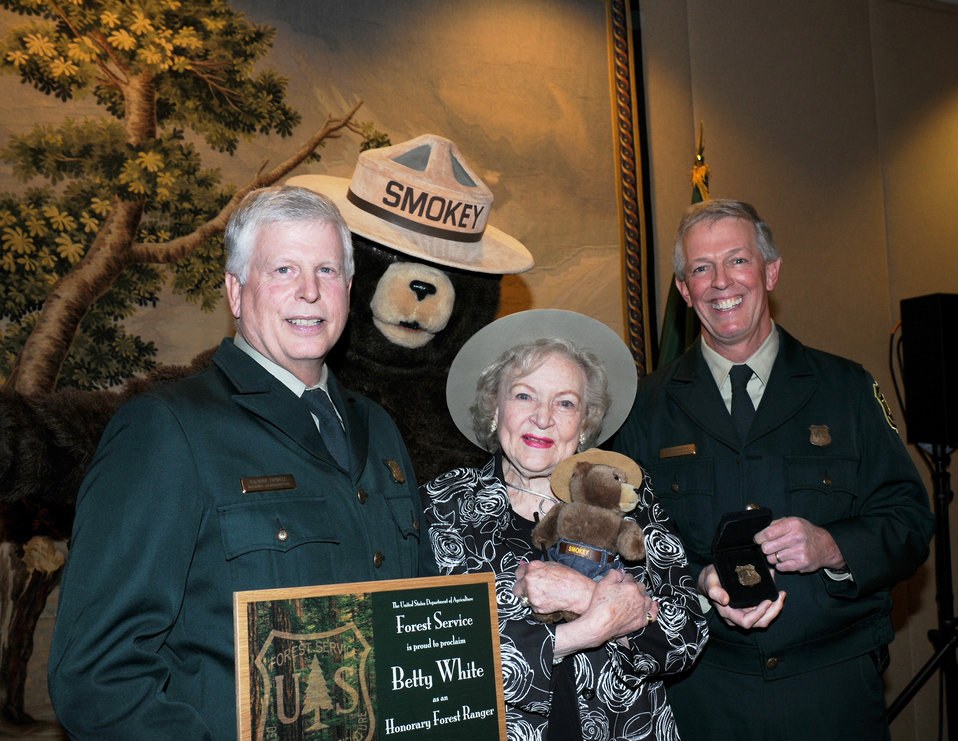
Actress Betty White holds the certificate and Forest Ranger badge presented to her by US Forest Service Chief Tom Tidwell (left) and Deputy Chief Hank Kashdan, as Smokey Bear looks on. White was named an Honorary Forest Ranger in a ceremony at the Kennedy Center for the performing Arts in Washington DC November 9.